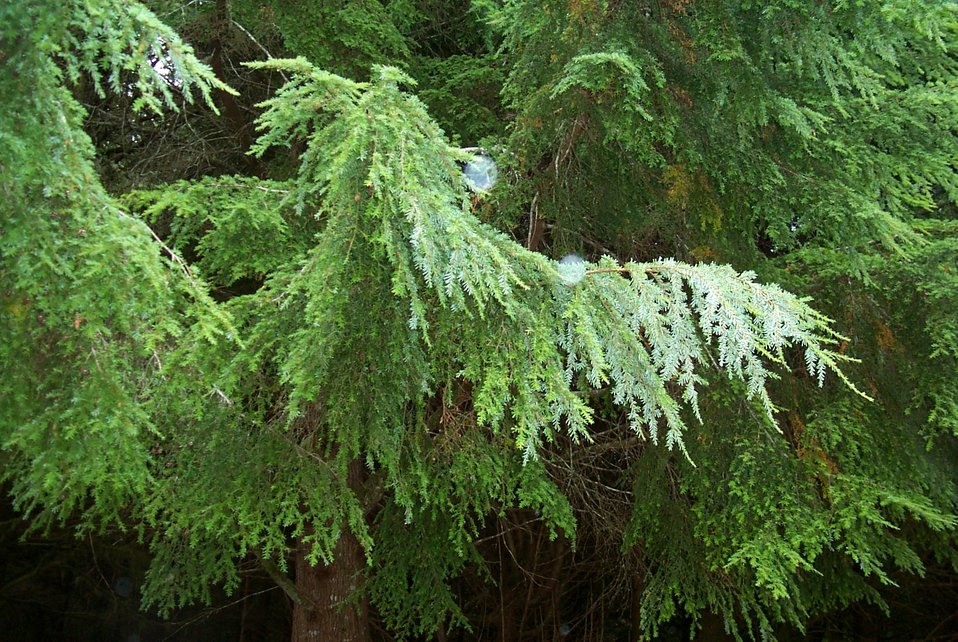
Oregon coast foliage at Fort Clatsop National Memorial.